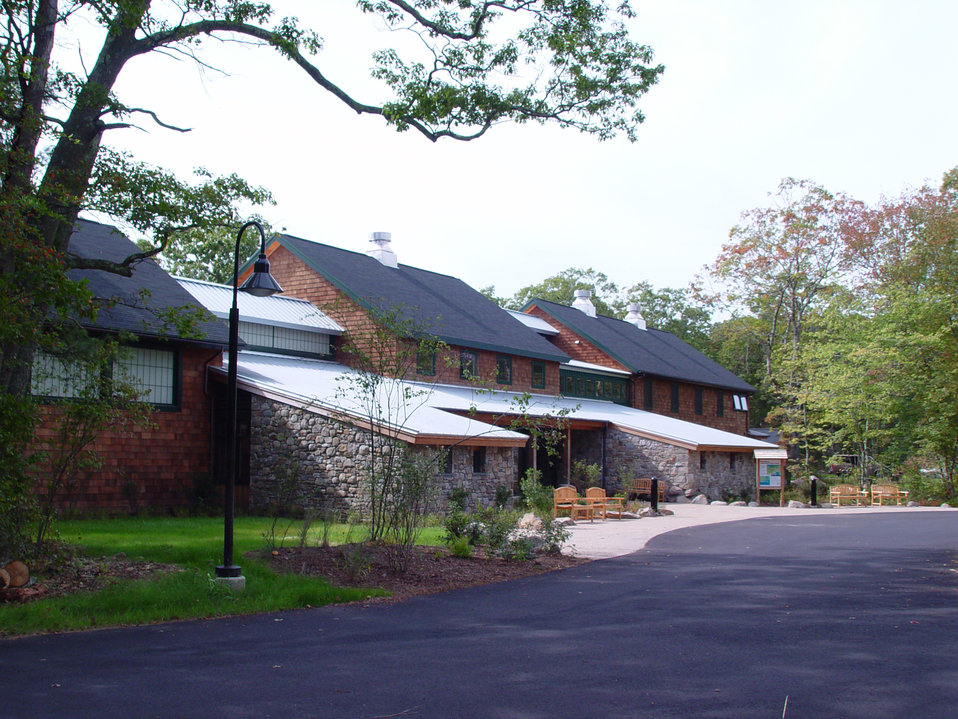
Kettle Pond Visitor Center in Charlestown, RI.